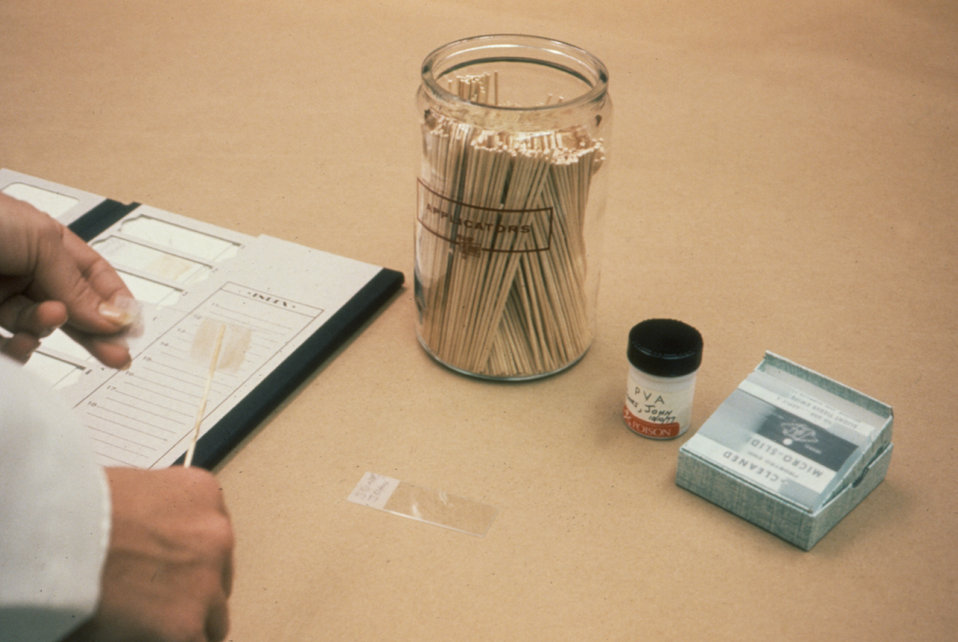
This is one step in the preparation of a smear from a PVA (polyvinyl alcohol)-fixed specimen.